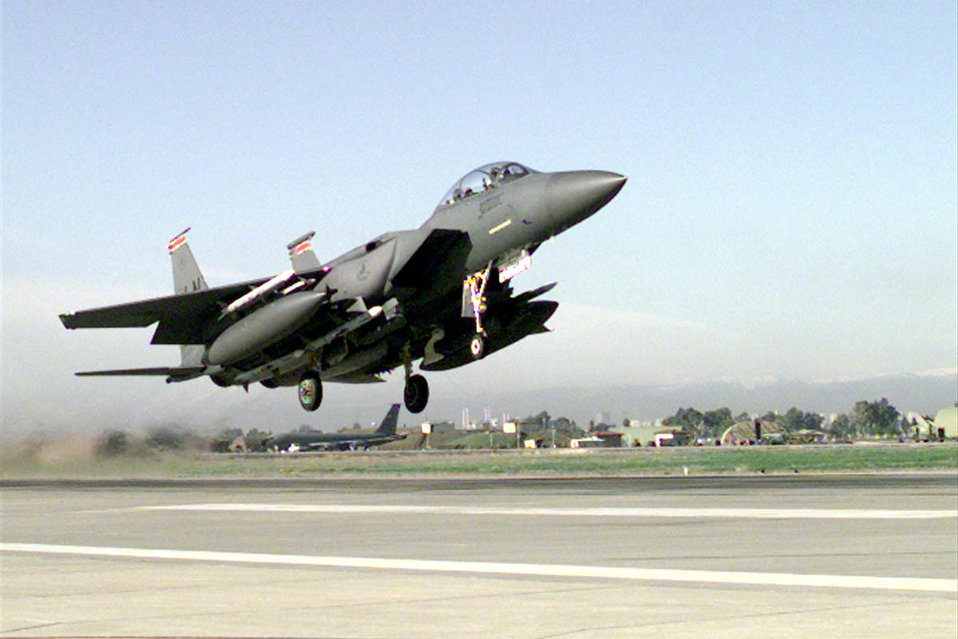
The mission begins

OPERATION NORTHERN WATCH -- An F-15E Strike Eagle takes off from the flightline at Incirlik Air Base, Turkey, Dec. 30 during a sortie in support of Operation Northern Watch.